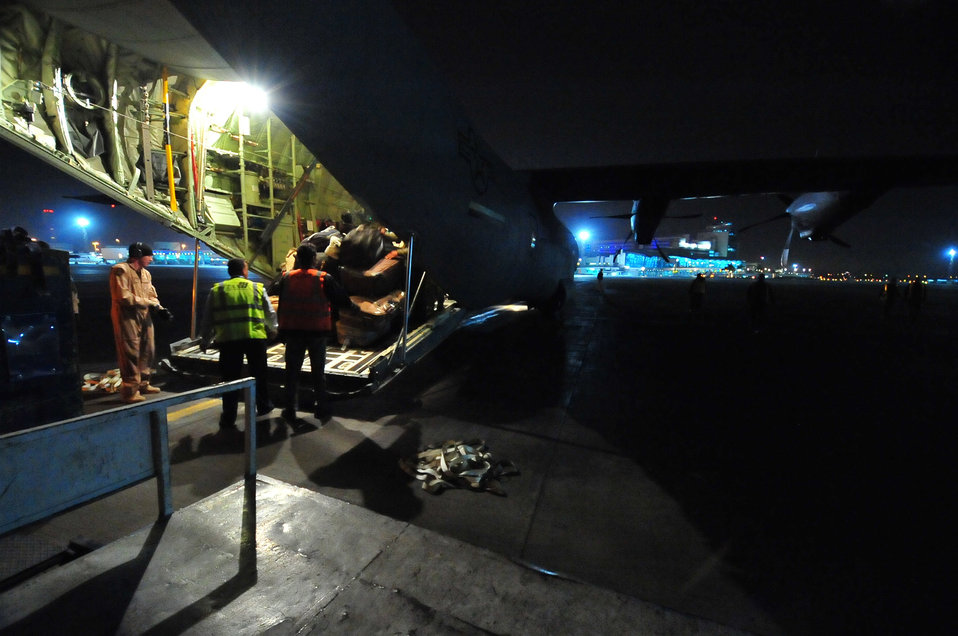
U.S. military aircraft bring displaced Egyptians home

A C-130J from Ramstein Air Base, Germany carrying Egyptian refugees arrives March 5, 2011, at Cairo's International Airport. This was the first of many scheduled flights from Djerba, Tunisia to Cairo, Egypt. This response to the migration emergency is part of the U.S. forces commitment to providing humanitarian assistance to refugees and displaced victims of the crisis in Libya.